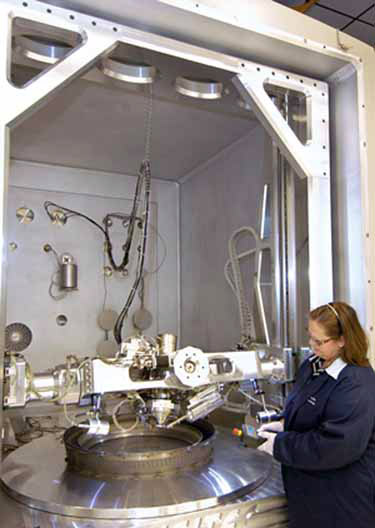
Air Force reaps dividends from scanning electron microscope

Judith Freer positions the MIRA X scanning electron microscope for an F108 stage four vane assembly March 28 at Tinker Air Force Base, Okla. The 5-foot-by-5-foot-by 5-foot internal capacity qualifies Tinker AFB's new addition as the largest-known scanning electron microscope in the world, according to Metallurgical Analysis Laboratory staff. Ms. Freer is a materials engineering technician with 30 years experience.